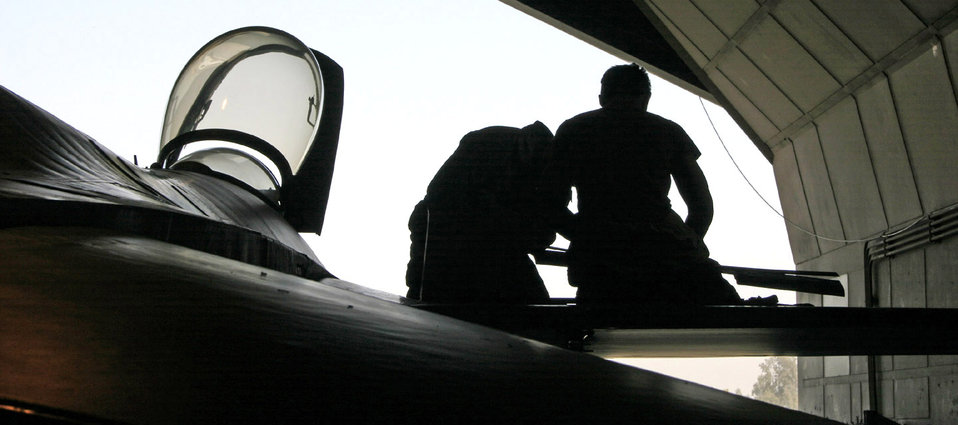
Airpower summary for Sept. 17, 2007

Maintainers at Balad Air Base, Iraq, work long hours to ensure their aircraft are ready to support coalition troops when the call comes. Coalition aircraft flew 61 close-air-support missions Sept. 17 in support of Operation Iraqi Freedom.